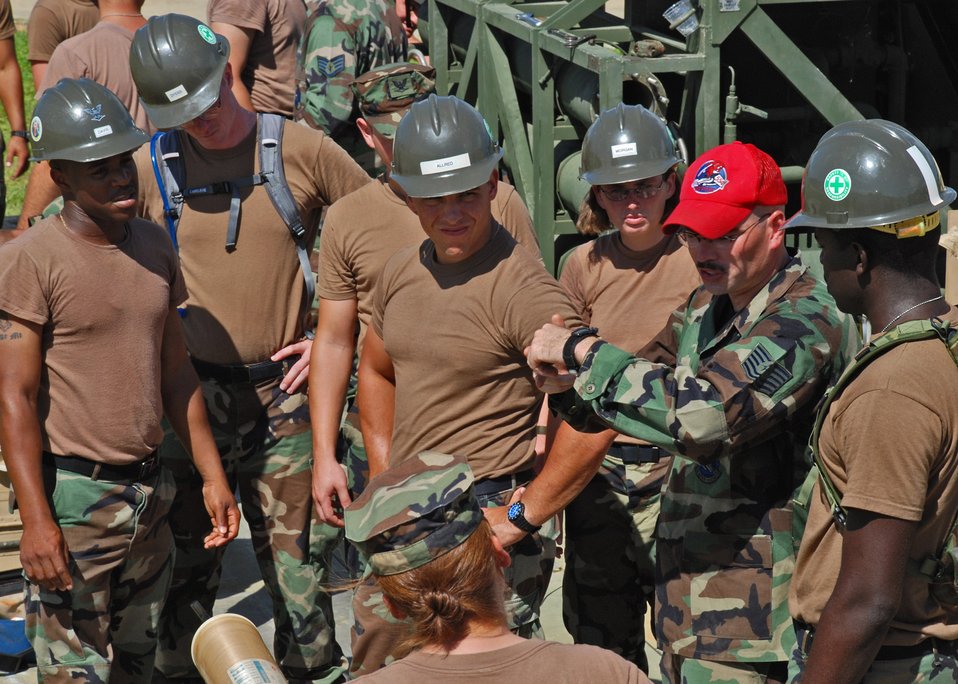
Navy Seabees train with Kadena RED HORSE members

Tech. Sgt. Matthew Kimball (second from right) explains certain pieces of equipment associated with the utilities training to Seabees from Naval Mobile Construction Battalion 7 Sept. 25 at Kadena Air Base, Japan. NMCB 7 is currently deployed to the Far East to provide construction support to shore installations in support of the war on terrorism.